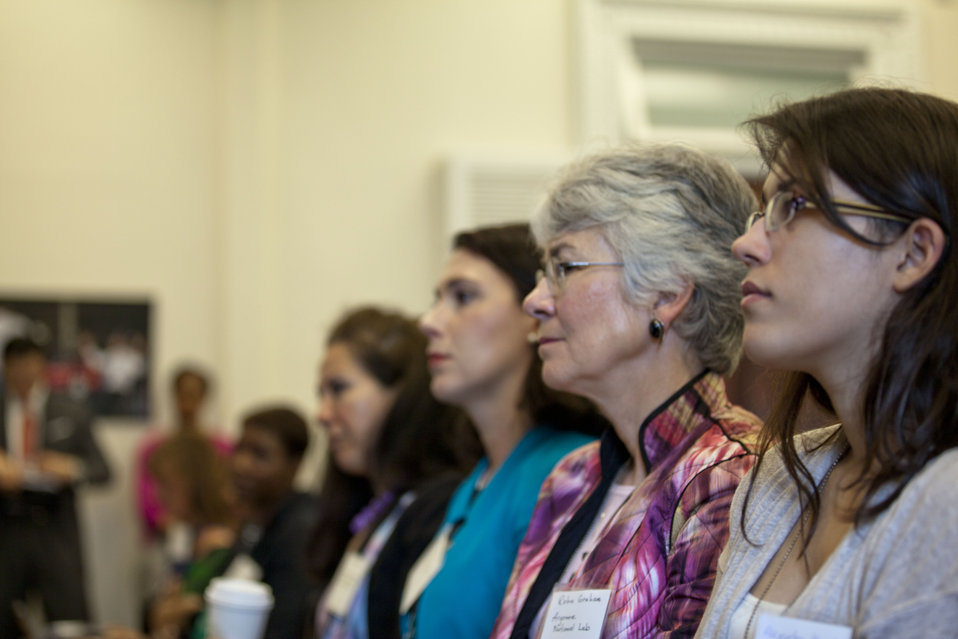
White House Leadership Summit on Women, Climate and Energy

Attendees were able to listen to and meet some of the nation's top women in the energy and climate fields.